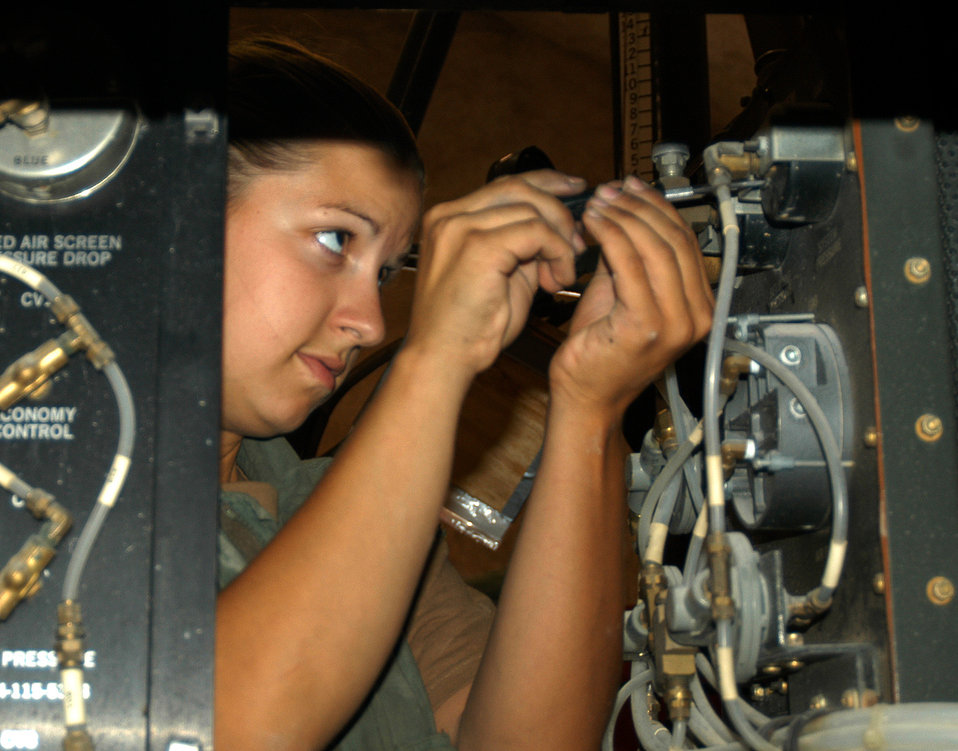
Equipment check

SOUTHWEST ASIA -- Airman 1st Class Kimberly Roberti secures a system-pressure meter on an aircraft air-conditioning unit. Airman Roberti is assigned to the 379th Expeditionary Maintenance Squadron. She is deployed from Royal Air Force Lakenheath, England. The squadron's aerospace ground equipment Airmen service, repair and inspect up to 300 pieces of equipment daily.